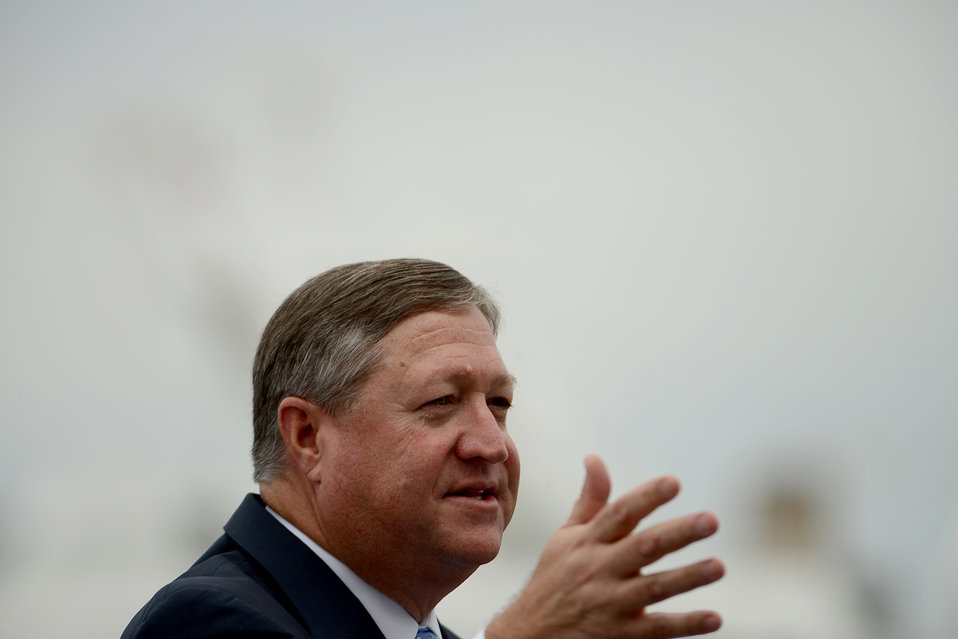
Opening ceremony

Secretary of the Air Force Michael Donley addresses the crowd during the opening ceremony of Air Force Week 2012 in New York City on Aug. 19.